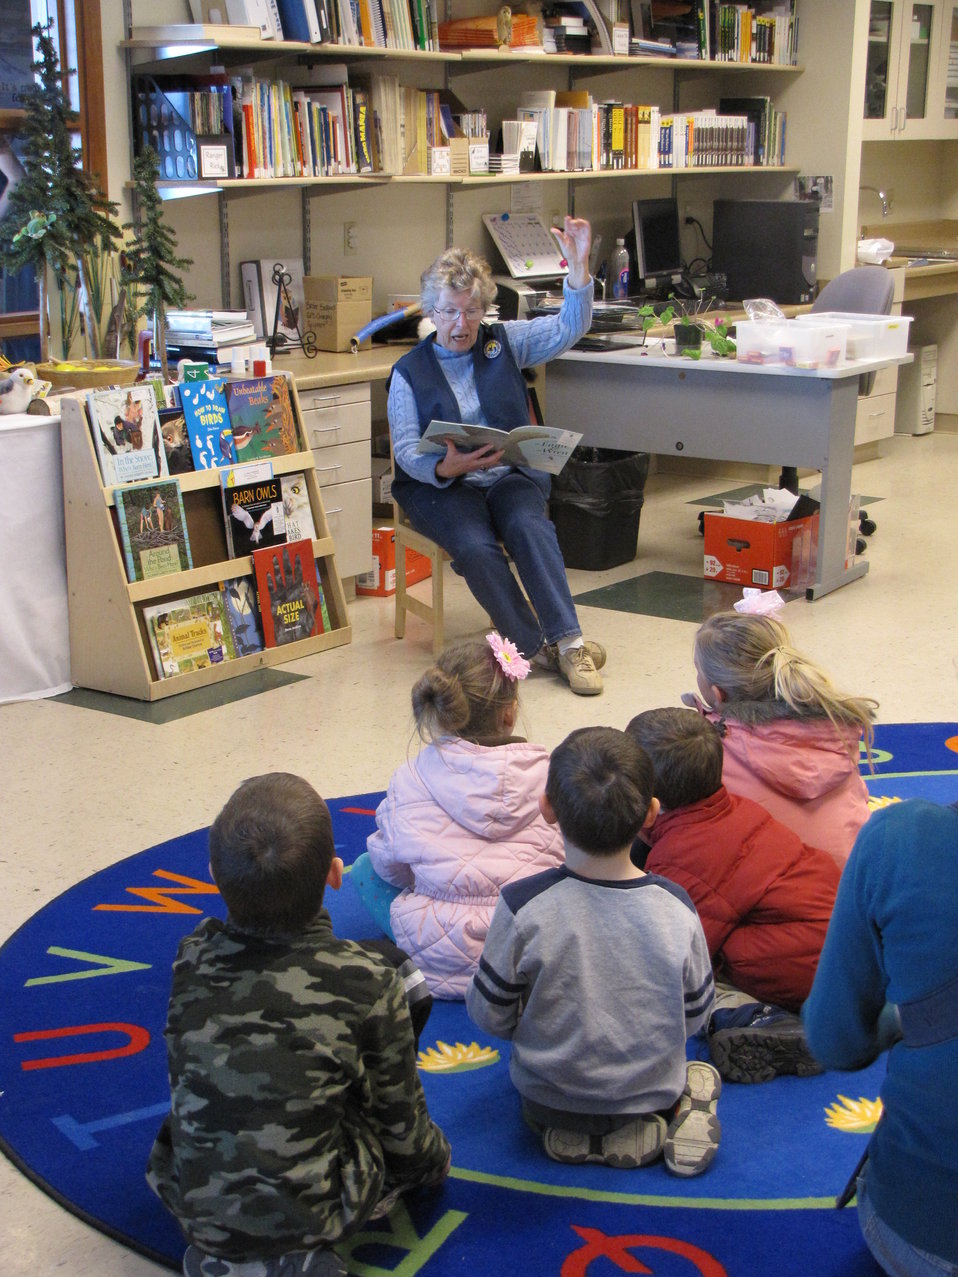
Bald Eagle Tales

Volunteer June Bywater tells the tale of the 'Eagle and the Wren' to young visitors on Bald Eagle Day, Feb. 12, 2011, in Bear River Migratory Bird Refuge's kinder corner.